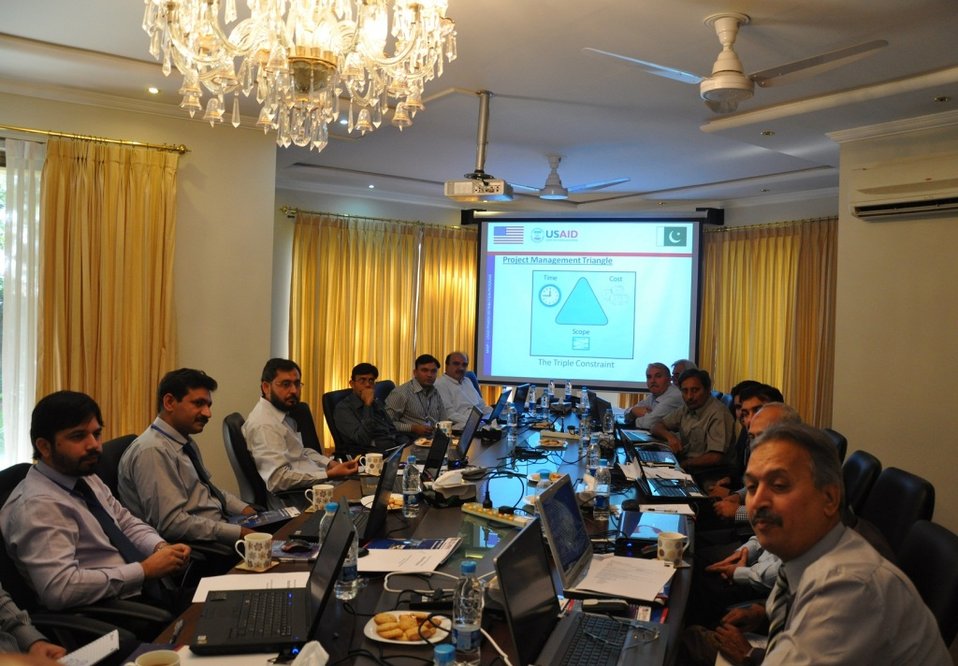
USAID's Power Distribution Program organized a 2-Day Workshop on Microsoft Project for DISCOs staff

The objective of the workshop was to enable Project Management Unit (PMU) officers to understand the current practices in the field of Project Management and the use of MS Project 20 I0. This will help them to manage and control their projects more efficiently. This activity will be expanded and PMU staff from other distribution companies (DISCOs) will be given MS Project 2010 training at each DISCO.